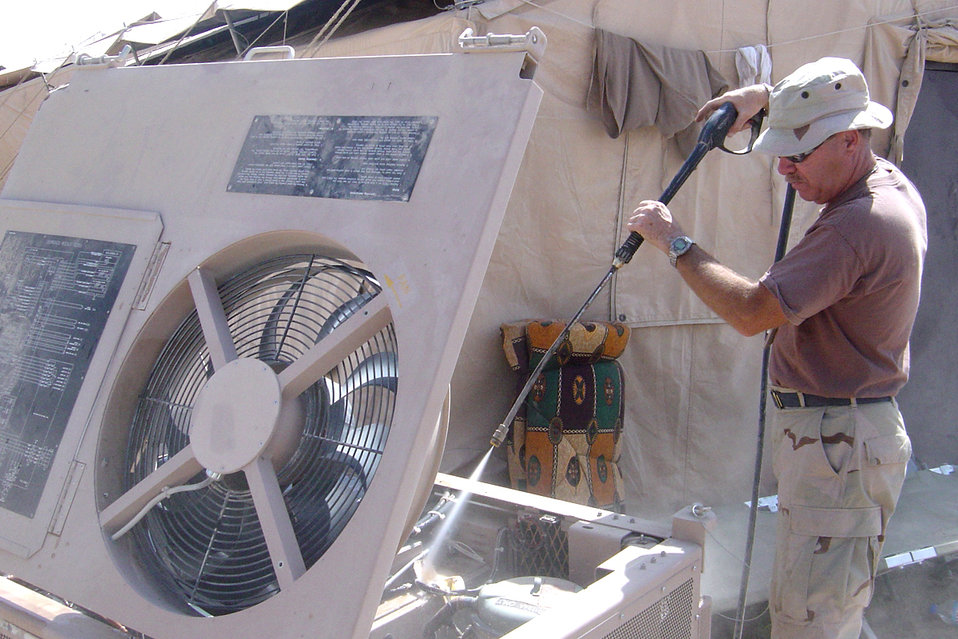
Cleaning

KIRKUK AIR BASE, Iraq -- Master Sgt. Herman Kremkau hoses down an air-conditioner unit in the tent city here. Kremkau and the rest of the heating, ventilation and air-conditioning team clean more than 300 air conditioners every other week to ensure base residents have a comfortable sleeping environment. Kremkau is assigned to the 506th Expeditionary Civil Engineer Squadron.